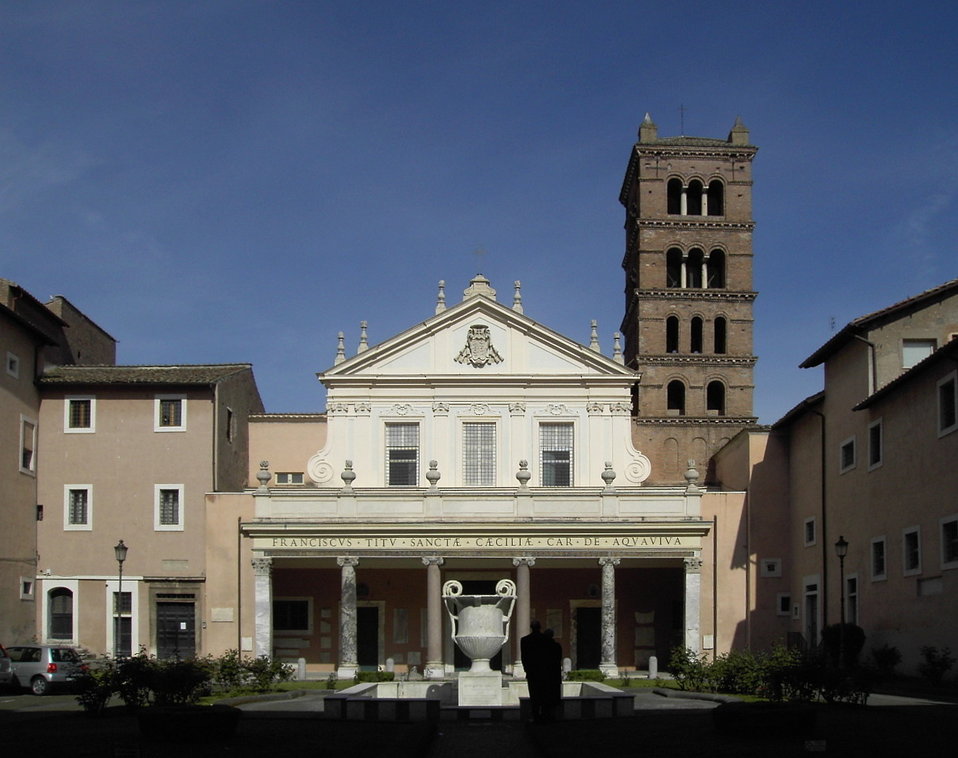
050424-003santaCecilia